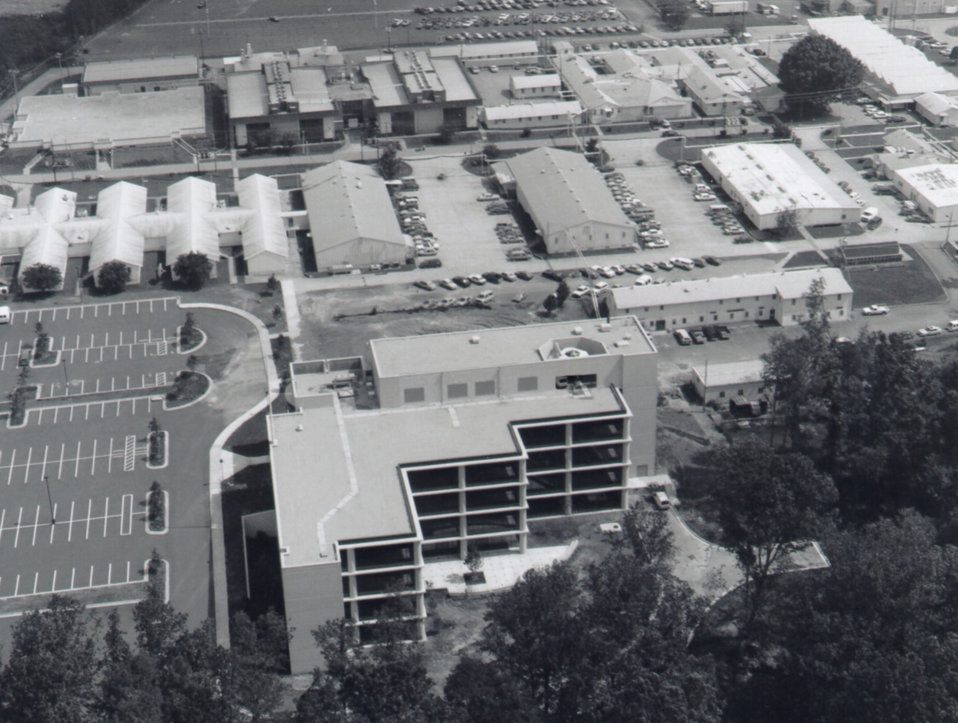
This was an aerial photograph of one of the National Institute for Occupational Safety and Health (NIOSH) buildings.